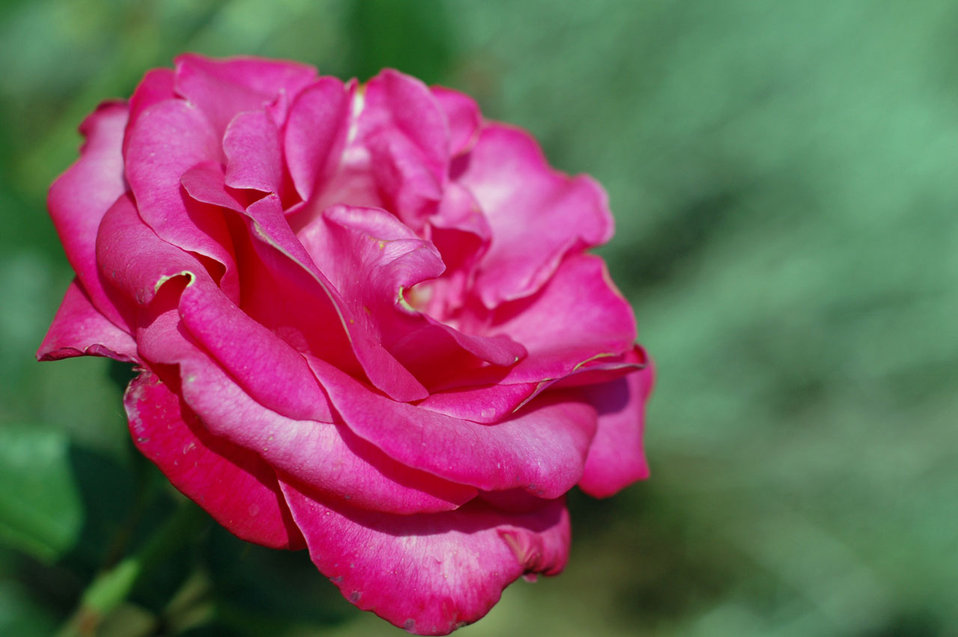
Pink rose

Single pink garden rose, green background.